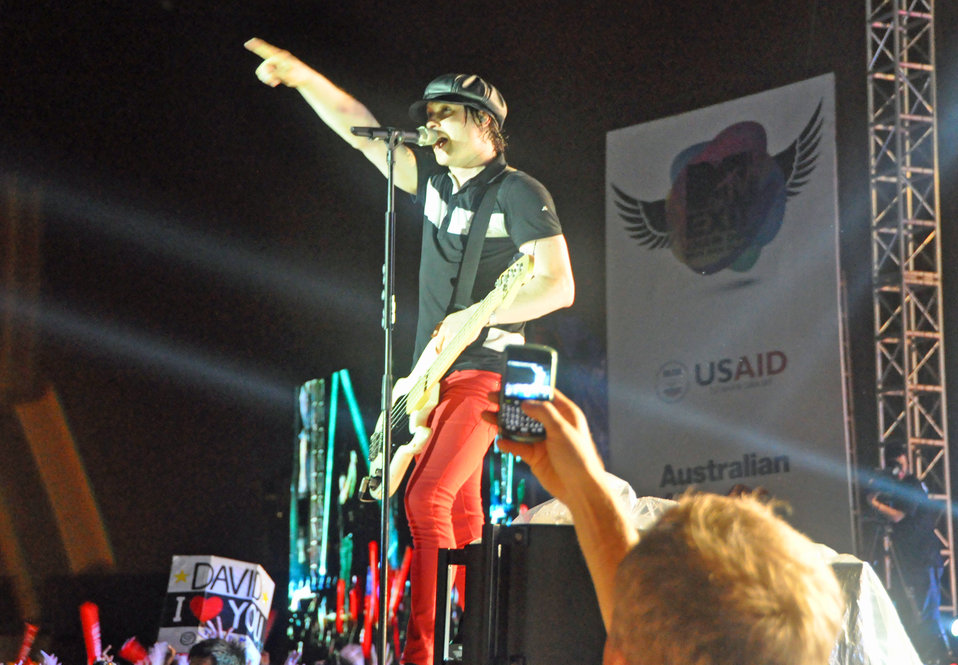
Simple Plan rocks at MTV EXIT concert in Hanoi against human trafficking

USAID co-sponsors MTV EXIT concert, campaign against human trafficking